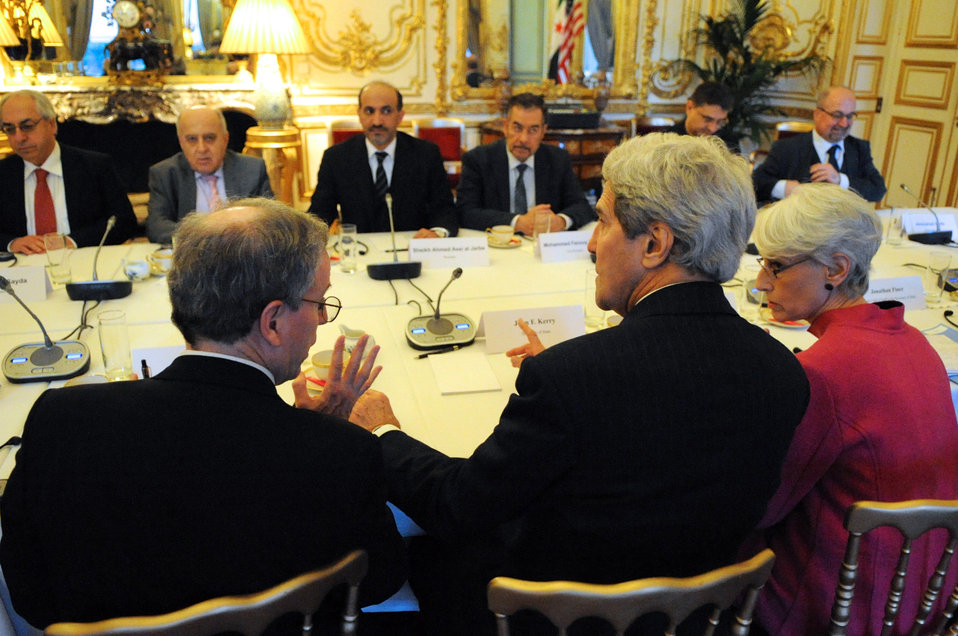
Secretary Kerry, U.S. Delegation Meets With Syrian Opposition Coalition in Paris

U.S. Secretary of State John Kerry, flanked by U.S. Ambassador to Syria Robert Ford and Under Secretary of State for Political Affairs Wendy Sherman, sits across from Syrian Opposition Coalition President Ahmed al-Jarba and his team before a meeting in Paris, France, on January 13, 2014.